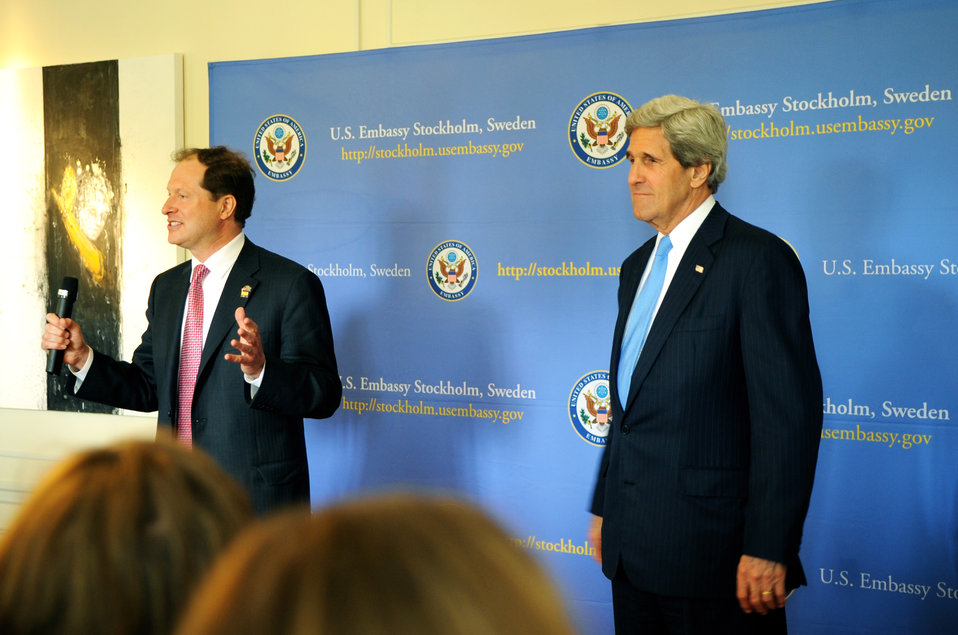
Ambassador Brzezinski Introduces Secretary Kerry to Embassy Stockholm Staff and Families

U.S. Ambassador to Sweden Mark Brzezinski introduces U.S. Secretary of State John Kerry to the staff and families of the U.S. Embassy in Stockholm, Sweden, on May 14, 2013.